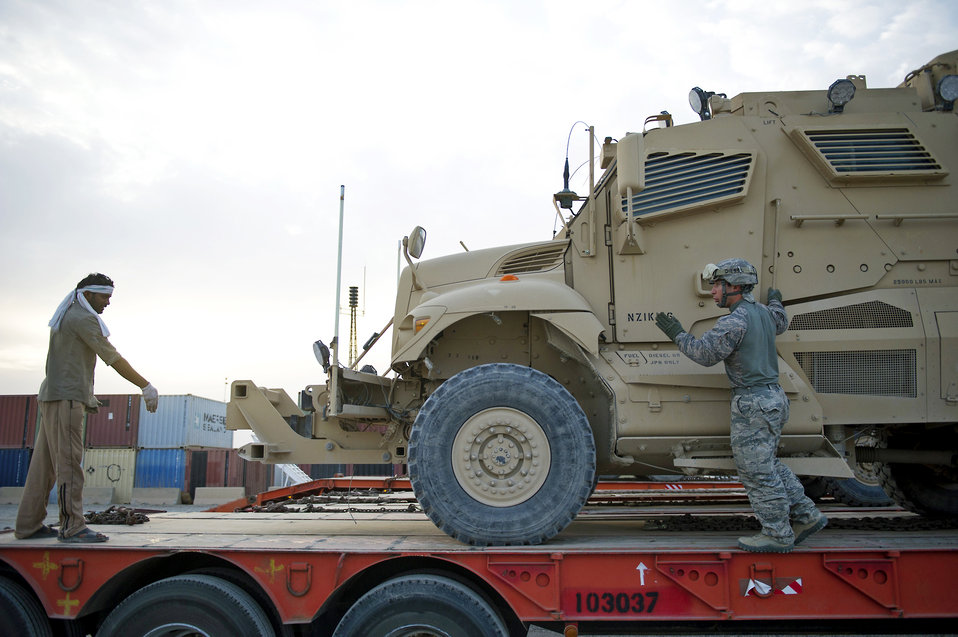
Moving on up

Senior Airman Ryan Baker, with the 70th Medium Truck Detachment, works with a contractor to align a mine-resistant ambush protector on a trailer at Forward Operating Base Warrior on Oct. 27, 2011. Members of the 70th MTD are hauling equipment out of Iraq to meet the deadline for the U.S. military transition from Iraq.